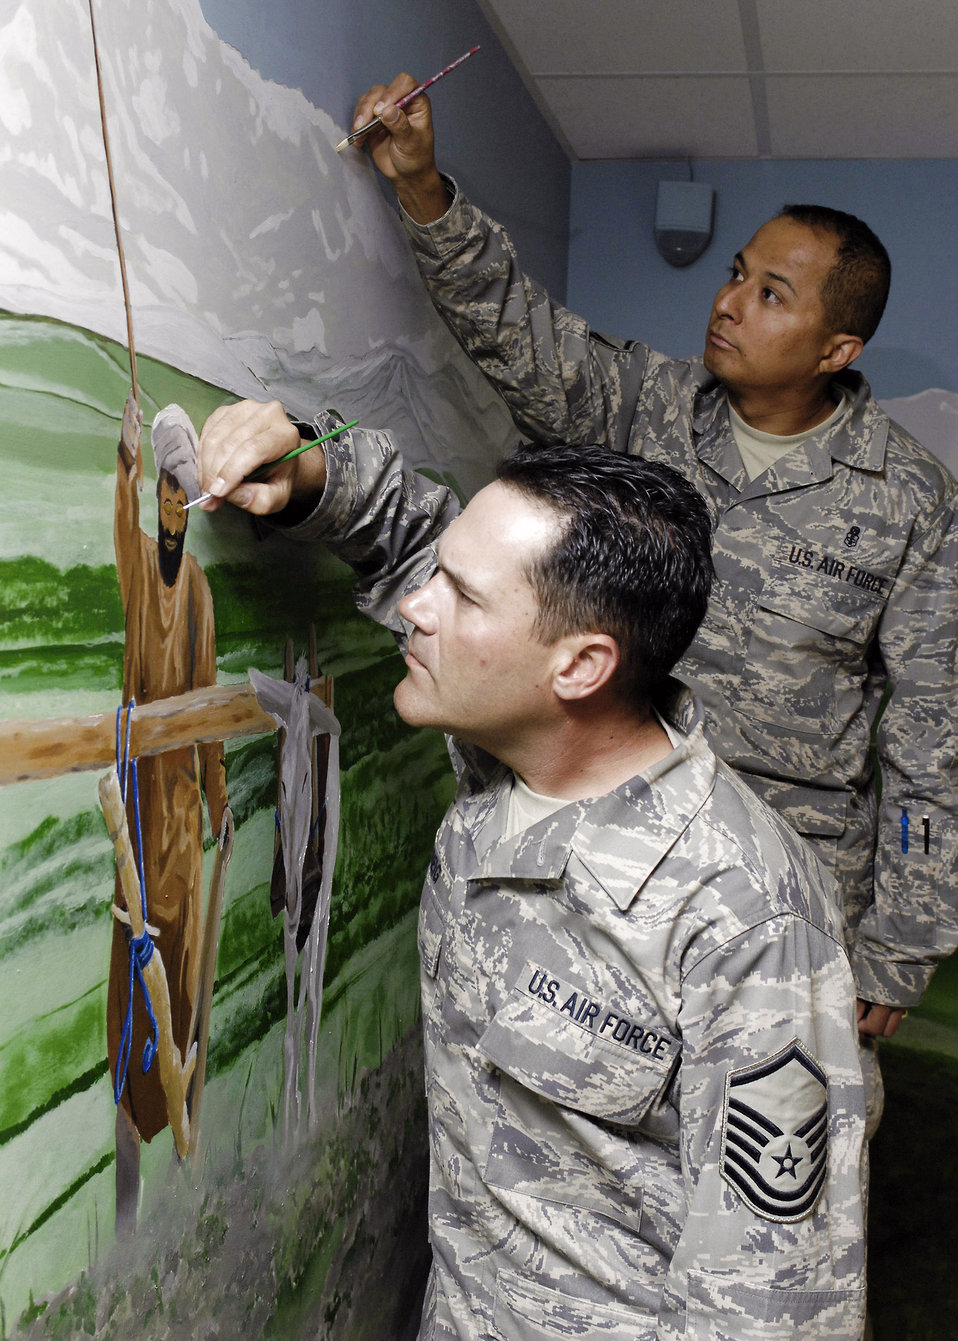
Art of War

Master Sgt. Albert Greig (front) and Master Sgt. Cruz Torres Jr., perform some final touch ups on a mural they and other artists painted in the hospital conference room at Bagram Air Base, Afghanistan, April 24. The mural features local culture and a panoramic view of the mountains near Bagram AB. Sergeant Greig is the Craig Joint Theater Hospital medical logistics superintendent and Sergeant Torres is NCO in charge of the emergency room.